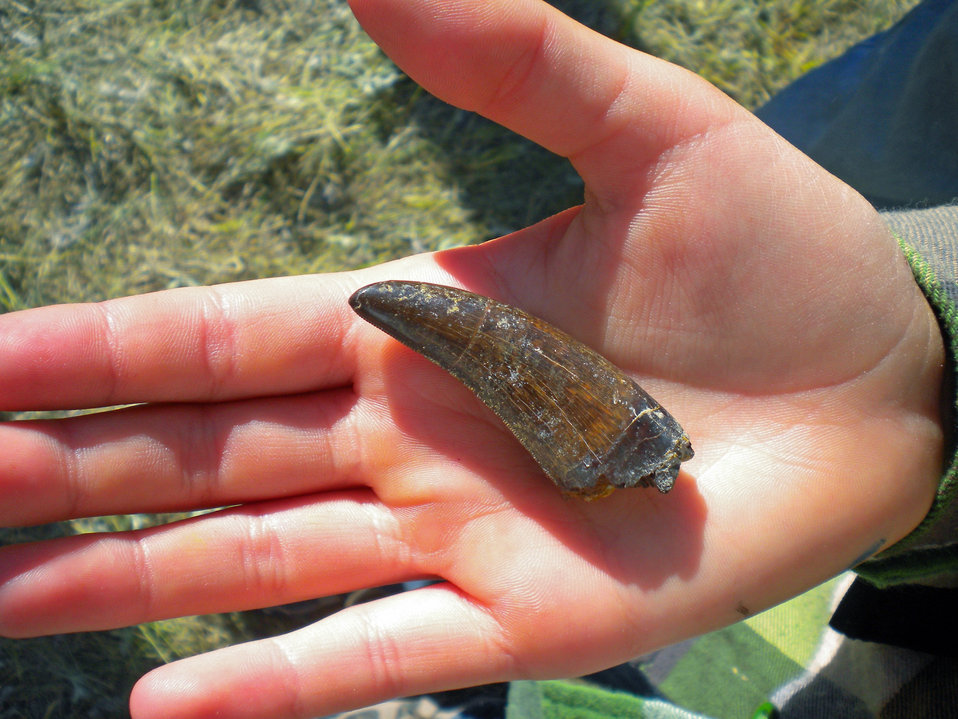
Tyrant tooth-a

A Tyrannosaurus Rex tooth found by Barb Beasley during a 2012 Passport in Time excavation in the Late Cretaceous Hell Creek Formation on the Custer National Forest in South Dakota on June 22, 2012. Unlike mammals that only possess two sets of teeth during their lifetime, dinosaurs replaced worn teeth by shedding them continuously throughout their lives. A single Tyrannosaurus may have shed hundreds or even thousands of teeth during its lifetime.